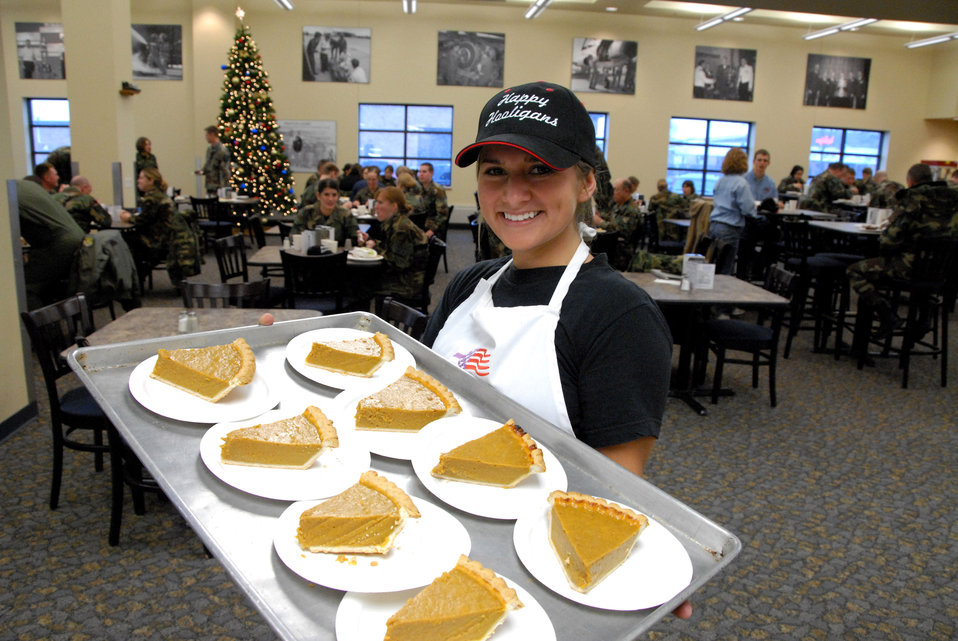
Happy Thanksgiving!

Airman 1st Class Trisha K. McDonald brings out the pumpkin pie Nov. 18 during the Thanksgiving holiday meal prepared for North Dakota Air National Guardsmen of the 119th Wing at Fargo.